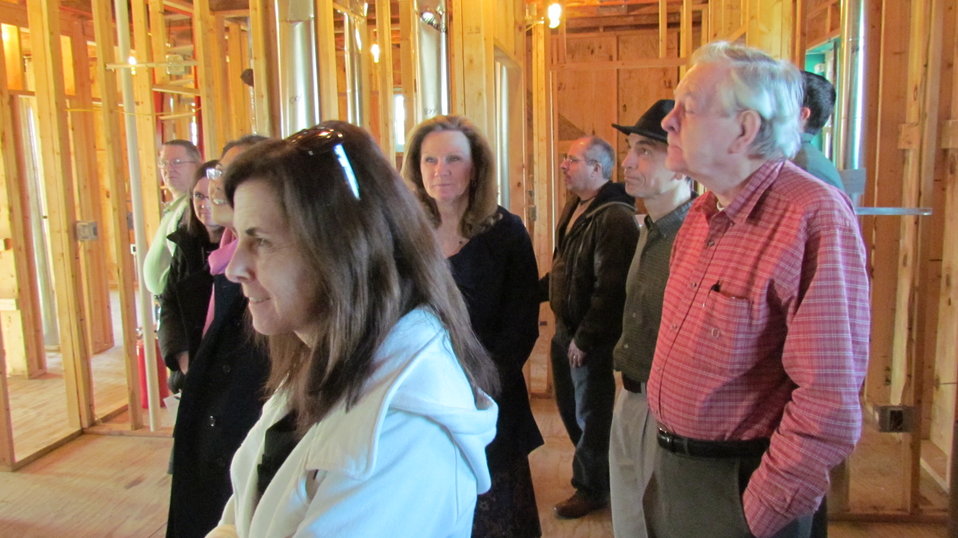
Net-Zero Energy Residential Test Facility – Members of EL staff touring facility before installation of drywall.